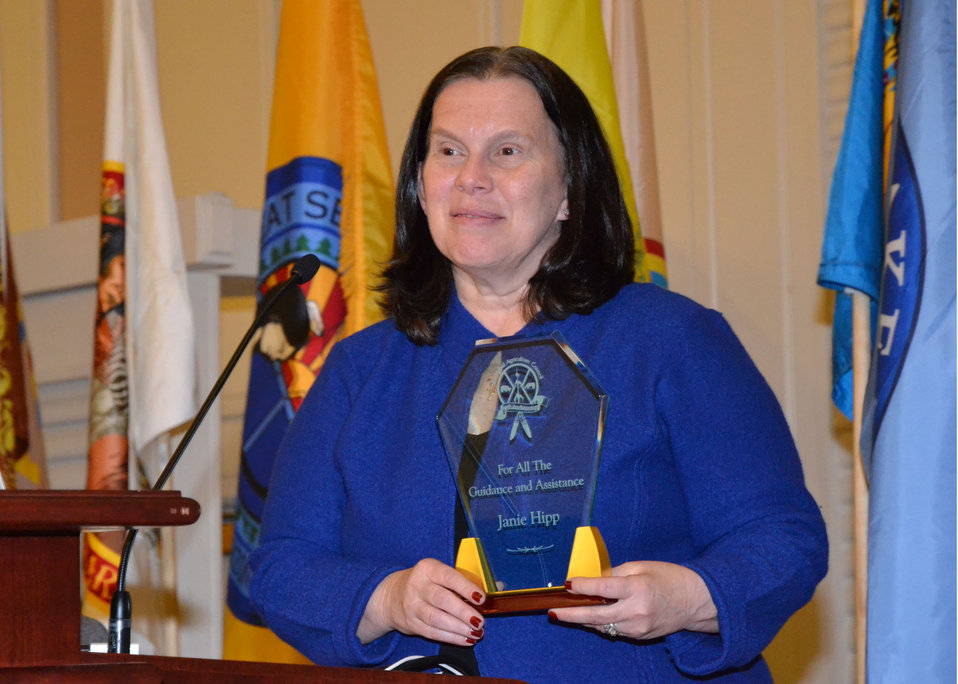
Janie Hipp, Office of the Secretary, Tribal relations, receives a recognition award for her liaison work with the nation's tribes at the Indian Agriculture Symposium, in Las Vegas, NV, on Wednesday, December 7, 2011.